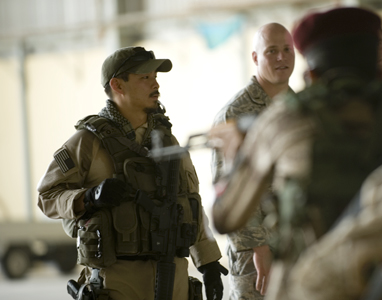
Iraqi airmen learn to protect leadership

Special Agent Masashi Yamazaki (left) instructs Iraqi security forces members on personal security operations June 1, 2011, at New Al Muthana Air Base, Iraq. The Iraqis were participating in personal security operations training to develop the skills needed to protect their leaders in future operations.